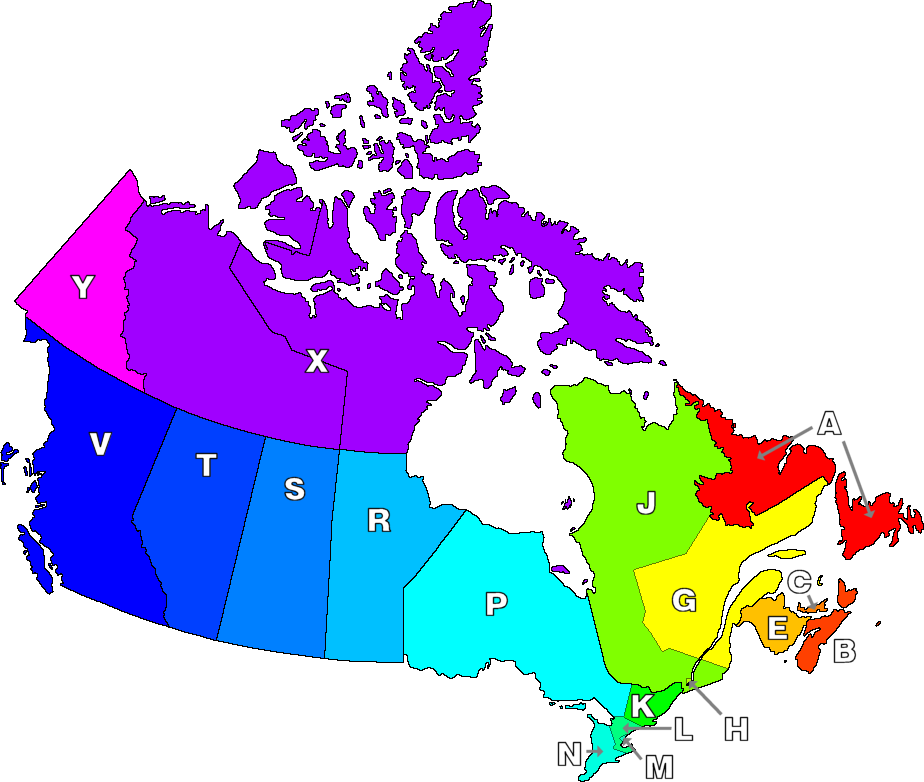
Codes postaux canadiens